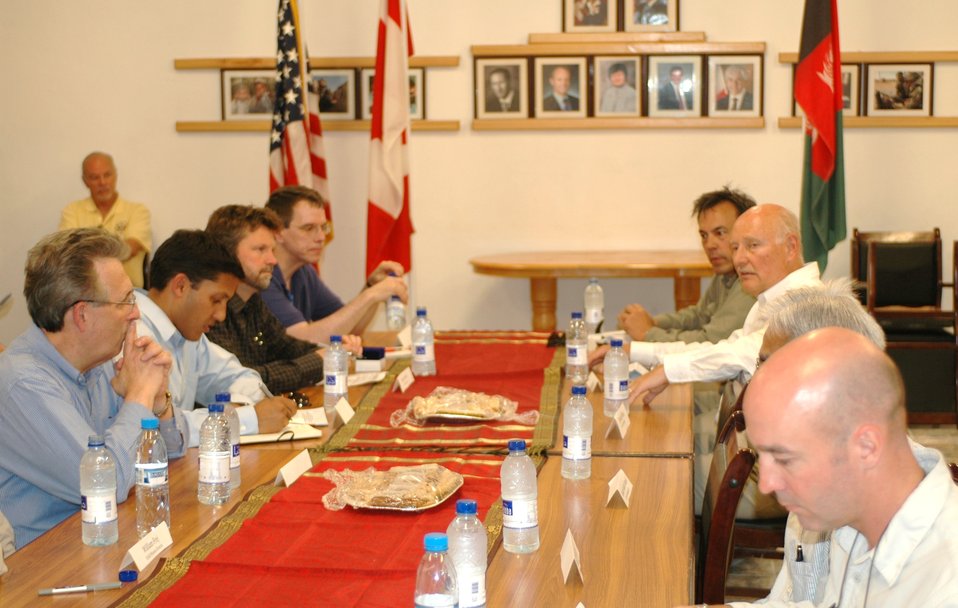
Dr Shah Visits Kandahar April 9, 2010